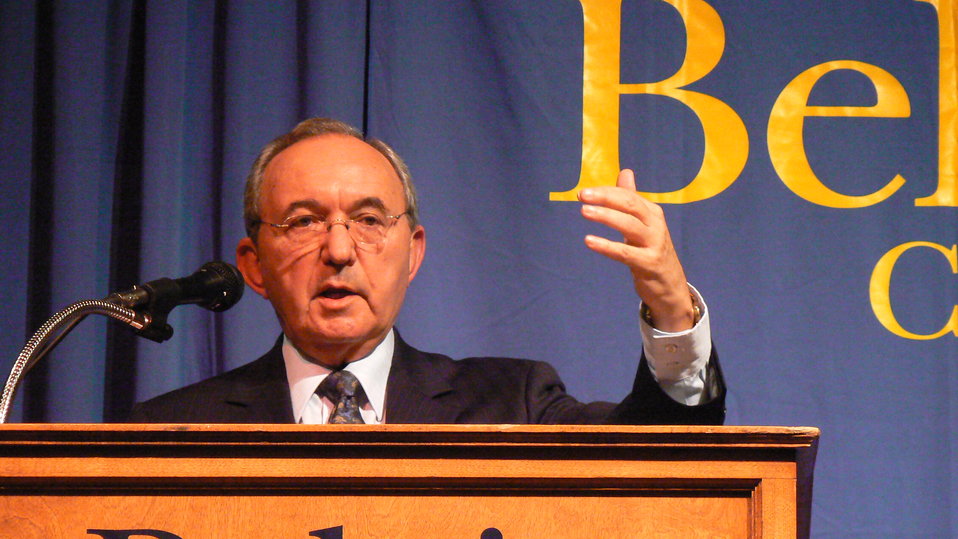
South African judge Richard Goldstone.